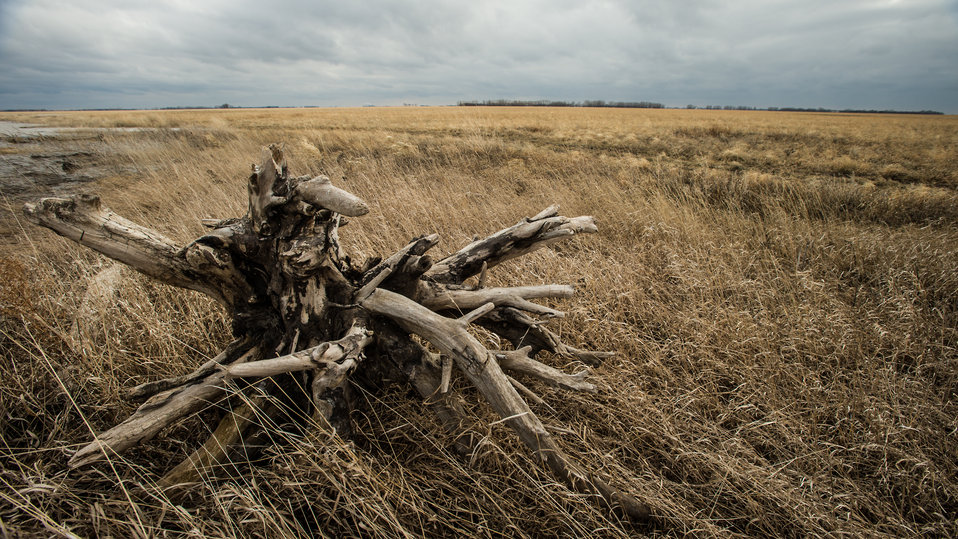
Woody debris on Neil Hanson Emergency Watershed Protection (EWP) Flood Plain Easement located along Red River east of Bowesmont, and part of the Red River basin in ND, Wednesday May 1, 2013. To learn about the Red River Basin Initiative, see www.mn.nrcs.usda.gov/news/features13/RRBI.html.